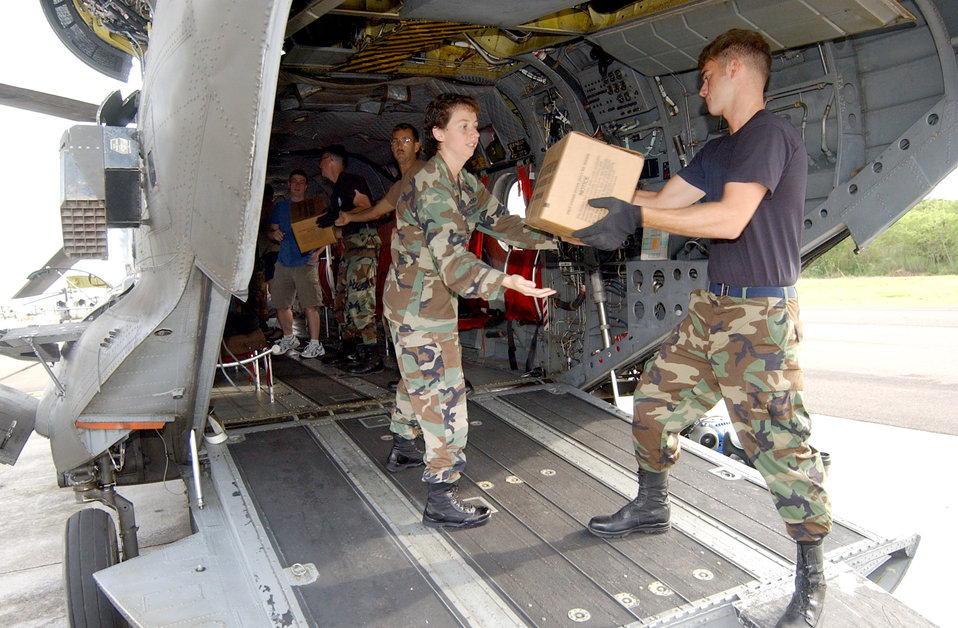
Medics help poisoning victims in Nicaragua

First Lt. Kristina Evener and Senior Airman Ben Hastings help a team of servicemembers load cases of water and Meals, Ready to Eat, into a CH-47 Chinook helicopter Sept. 10. Airmen and Soldiers are responding to a request for help from the U.S. Embassy in Nicaragua after more than 30 people died in the city of Leon from a toxic batch of moonshine laced with methanol. The Airmen are with Joint Task Force Bravo's Air Force Forces logistics flight.